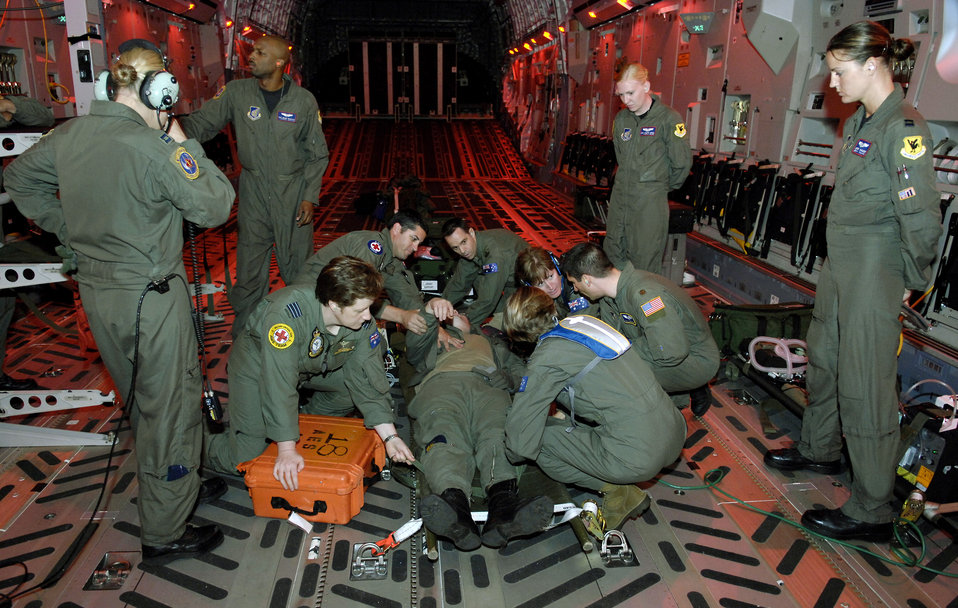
Australians train to save lives on C-17

Air Force instructors observe as Royal Australian Air Force medical personnel tend to a simulated patient onboard a C-17 Globemaster III Oct. 16 during aeromedical evacuation operations training at Hickam Air Force Base, Hawaii. Airmen from the 18th Aeromedical Squadron from Kadena Air Base, Japan, are at Hickam to train RAAF medical personnel who will be using specialized equipment and the C-17 for aeromedical evacuation.